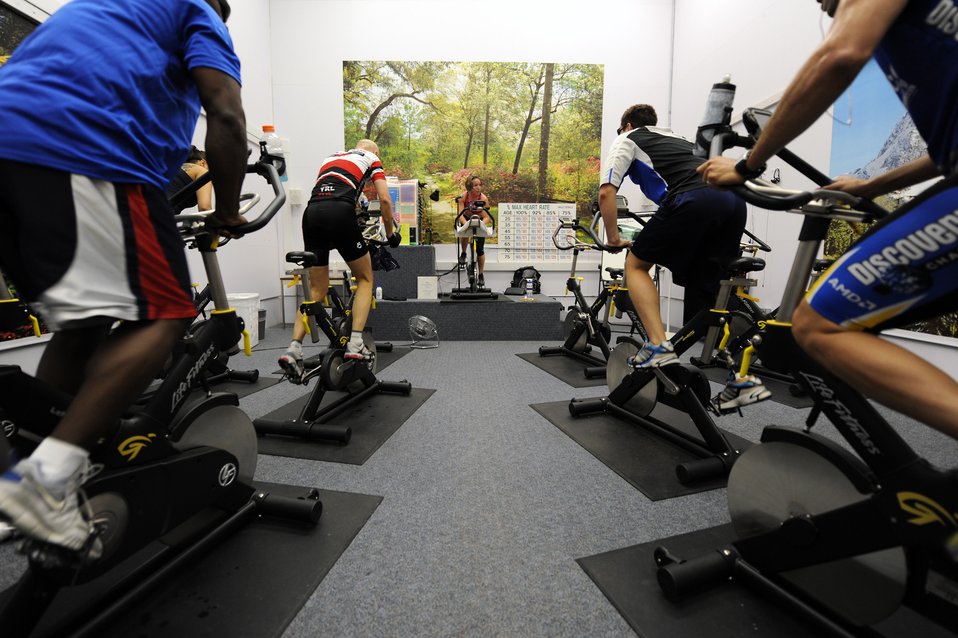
Training camp ends

Maj. Vanessa Warren instructs a spin class May 7, 2010, for Air Force team members participating in the inaugural Warrior Games. The team has been training at the Air Force Academy in Colorado Springs, Colo. Major Warren is an coach at the Academy. The Warrior Games competition begins May 10 and finishes on May 14 and is taking place at the U.S. Olympic Training Center in Colorado Springs.